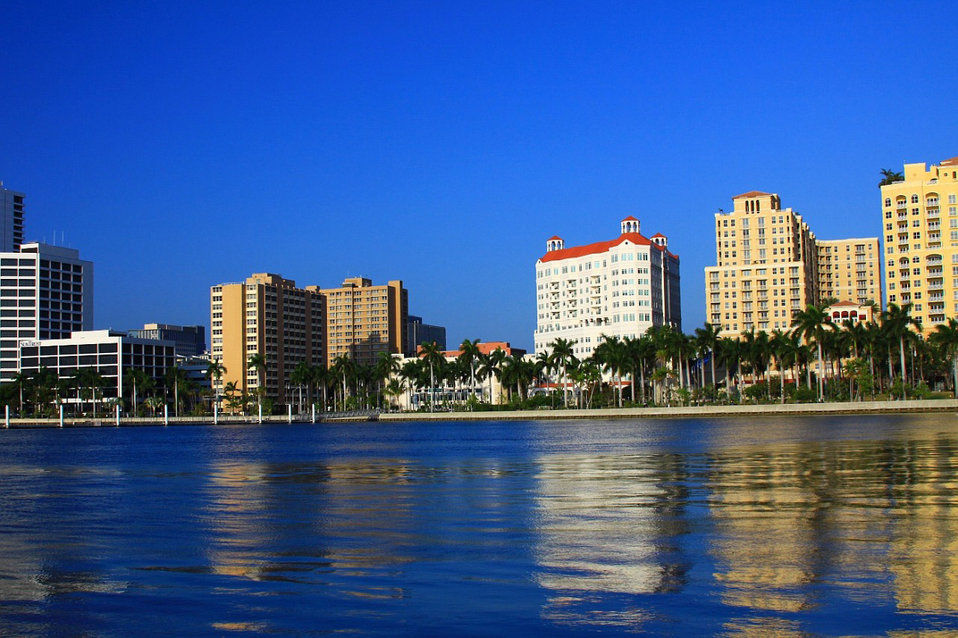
West palm beach fl

Part of west palm beach skyline.